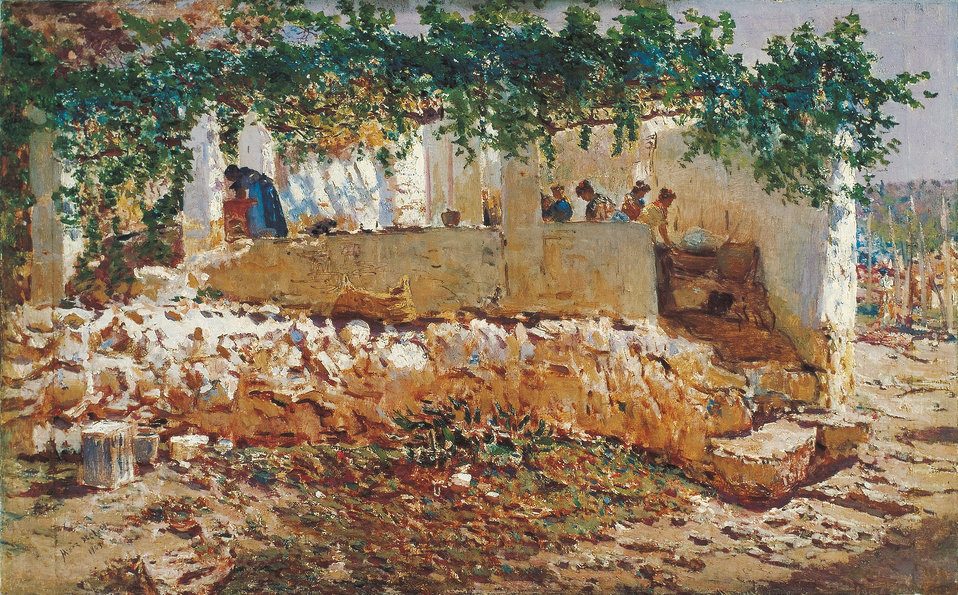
Washerwomen. Oil on canvas, 62 x 98 cm, Inv. CTB.2008.8 Museo Carmen Thyssen Native name Museo Carmen Thyssen Location Málaga, Spain Coordinates 36° 43′ 17″ N, 4° 25′ 22″ W Established 2011 Website www.carmenthyssenmalaga.org